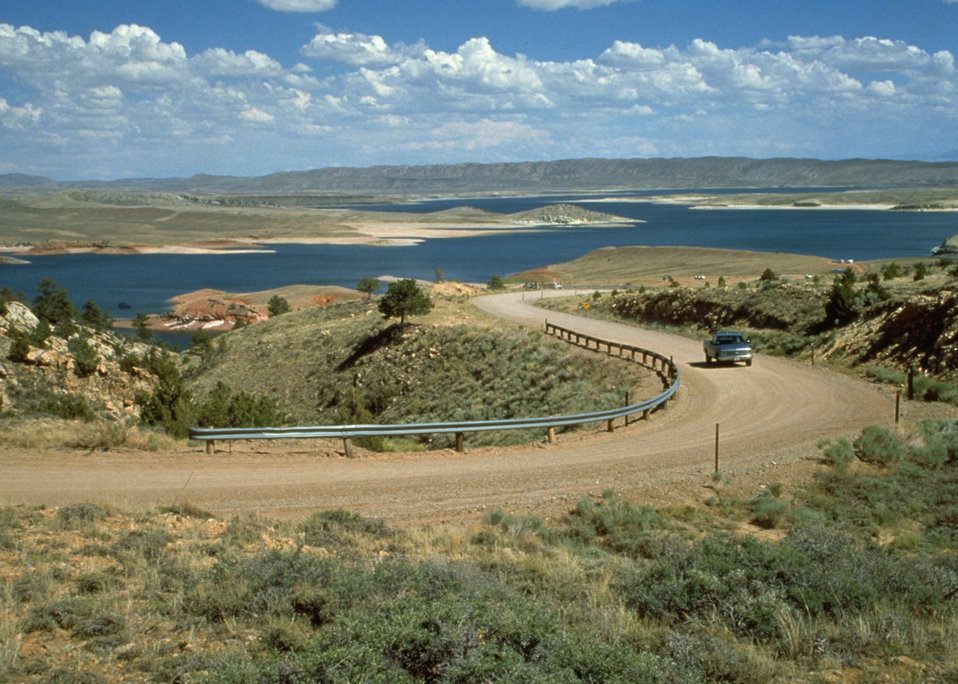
Alcova Seminoe.